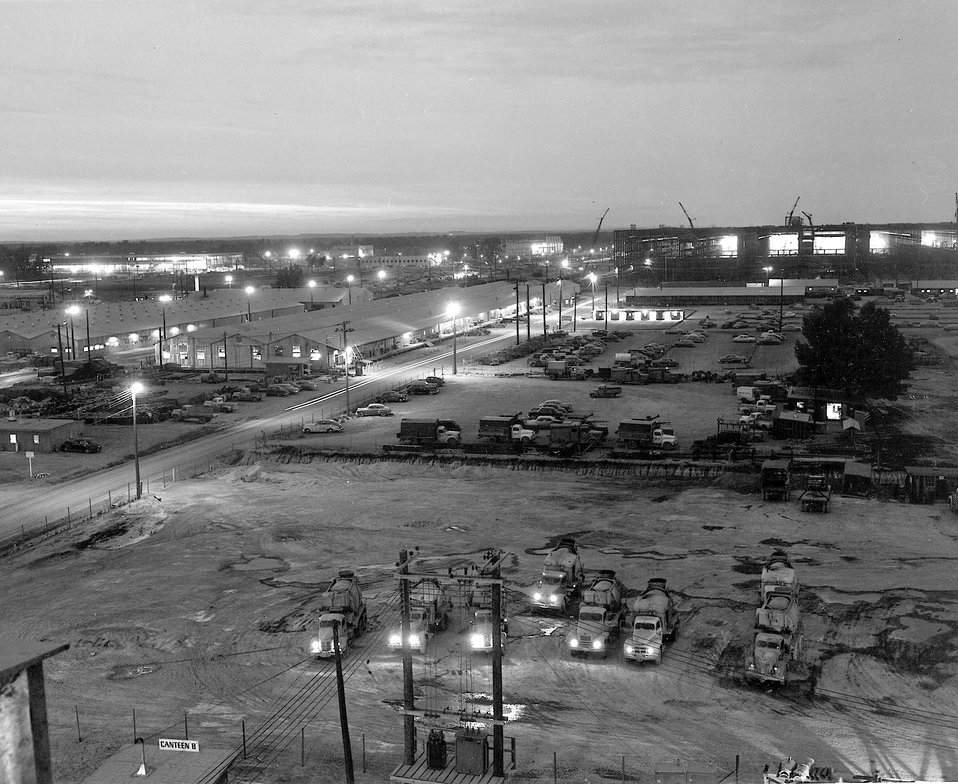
Paducan Area-Night view plant construction.